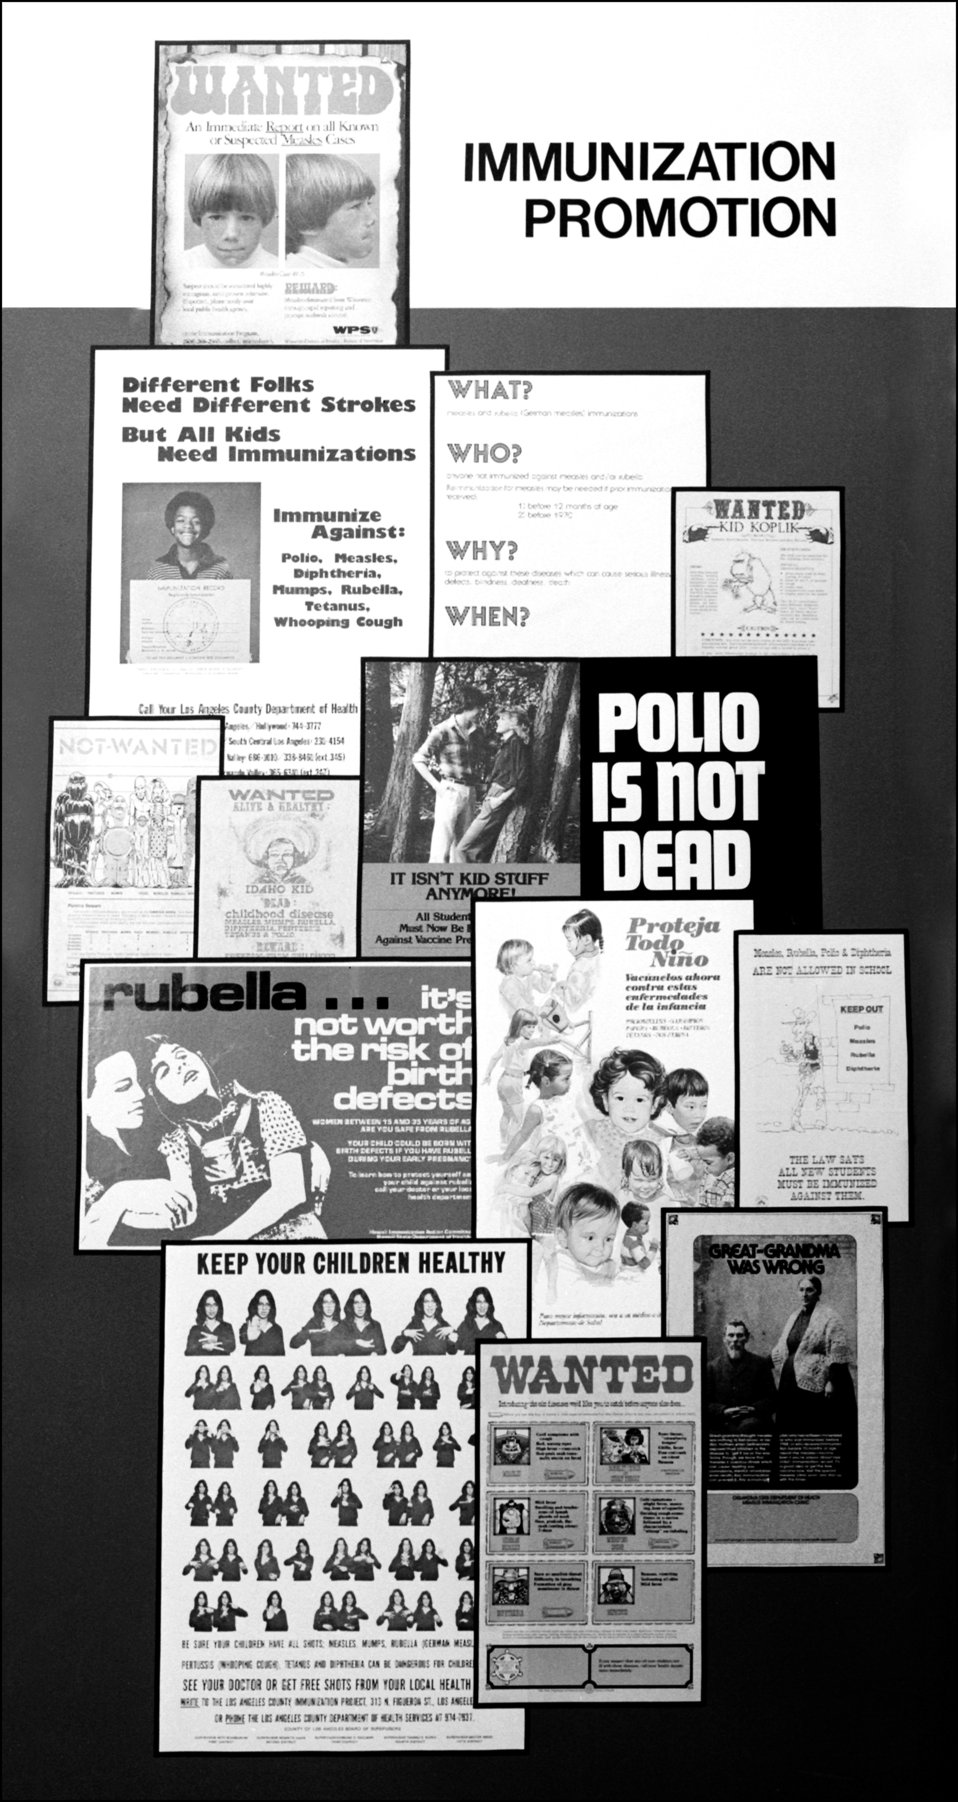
A collection of posters promoting several immunization programs.